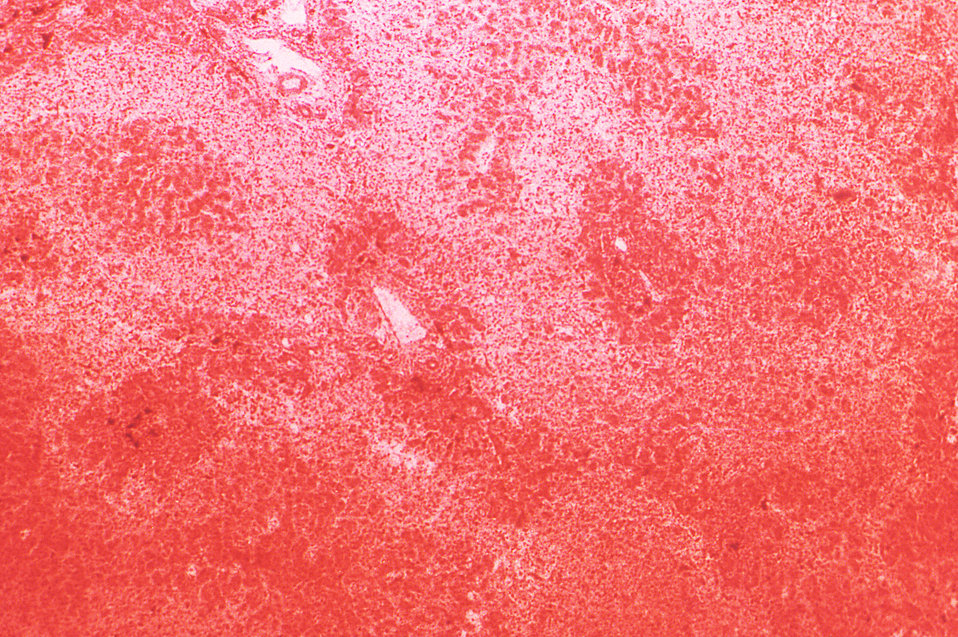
Under a low magnification of 40X, this hematoxylin-eosin-stained (H&E) photomicrograph depicts the cytoarchitectural changes found in a liver tissue specimen extracted from a deceased yellow fever patient. Of importance, are the areas of severe mid-zonal necrosis, and the intact hepatocytes surrounding the portal spaces and the central veins. See PHIL 2176, and 8239, depicting TEMs of the yellow fever virus.